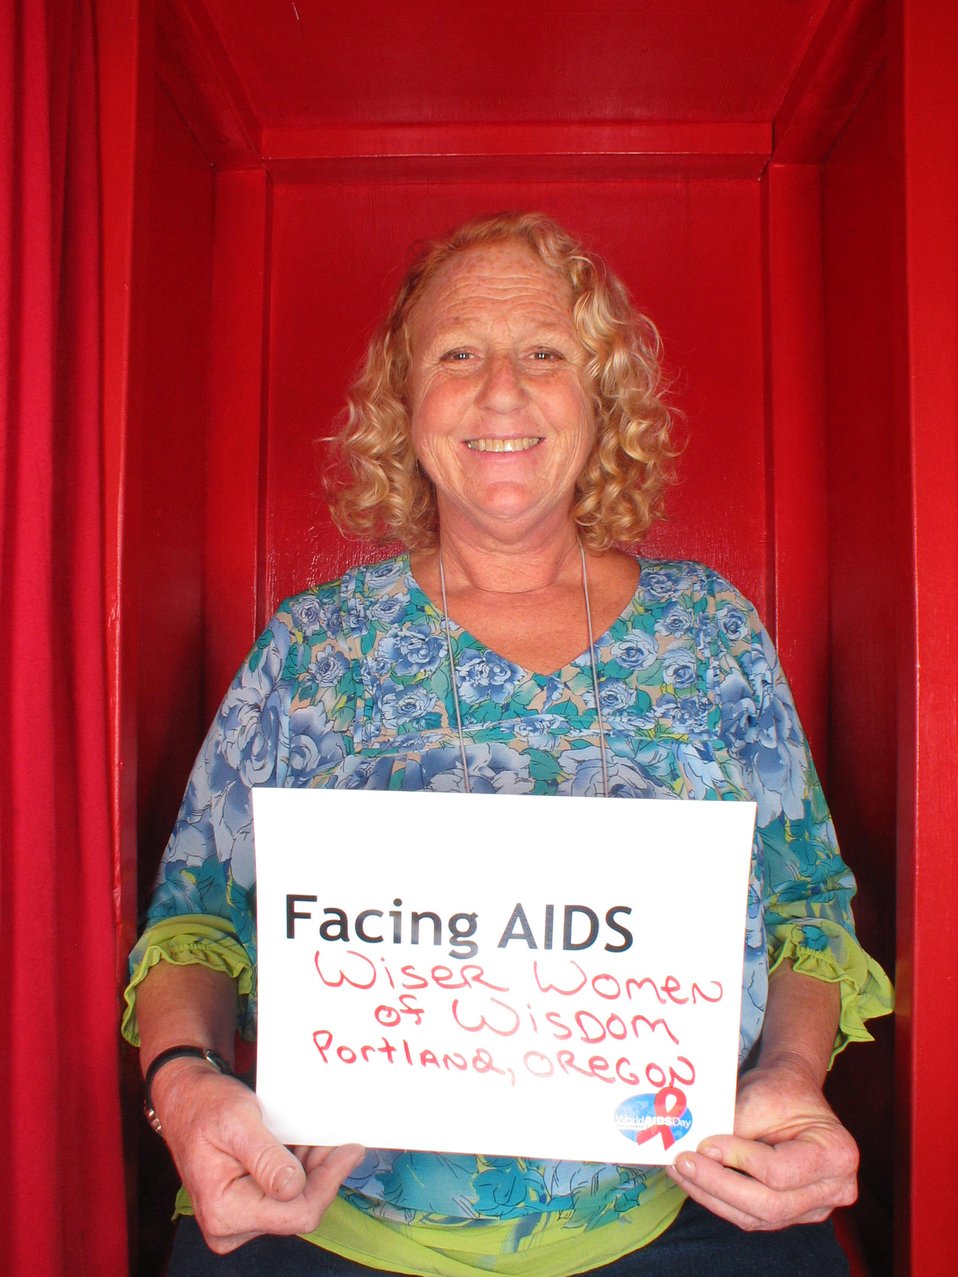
Facing AIDS wiser Women of Wisdom. Portland, Oregon